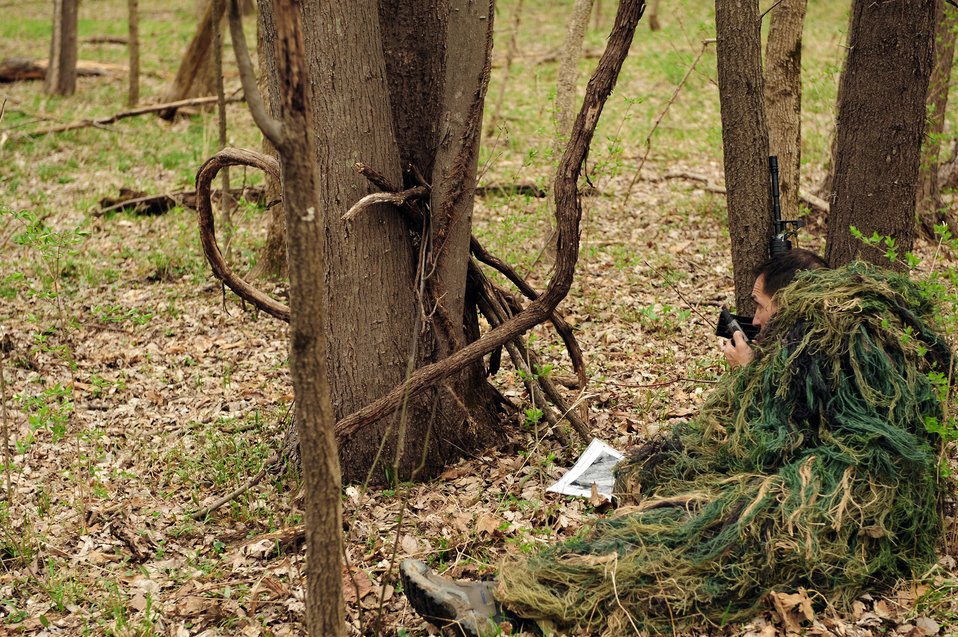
Combat survival training

Tech. Sgt. Robert Graham communicates with aircrew members requesting extraction after a